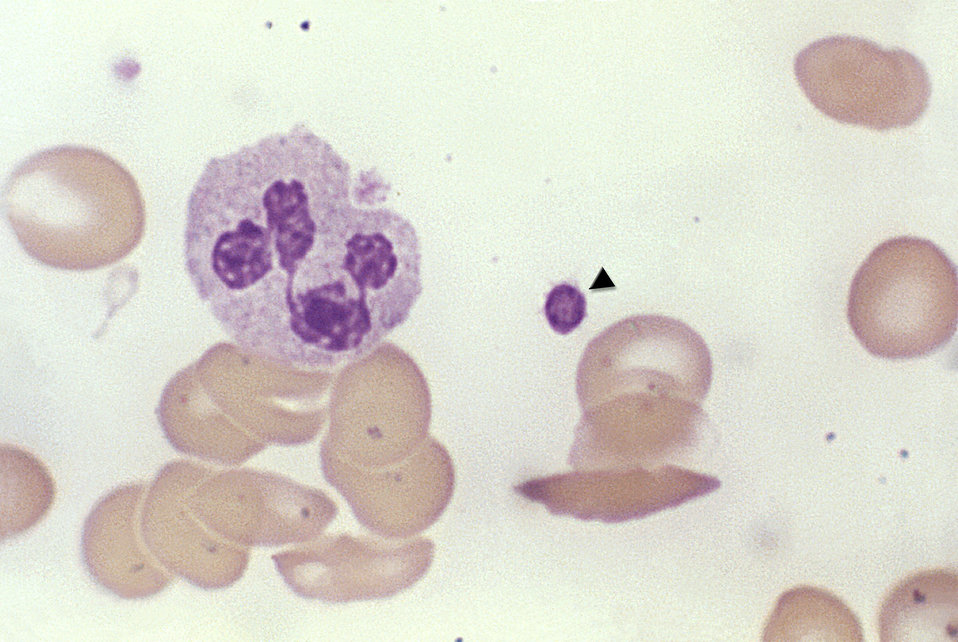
This micrograph of a fixed blood smear revealed a round aggregation of platelets (arrow), a polymorphonuclear leukocyte (PMN), and a number of red blood cells (RBCs); Mag. 1000x.